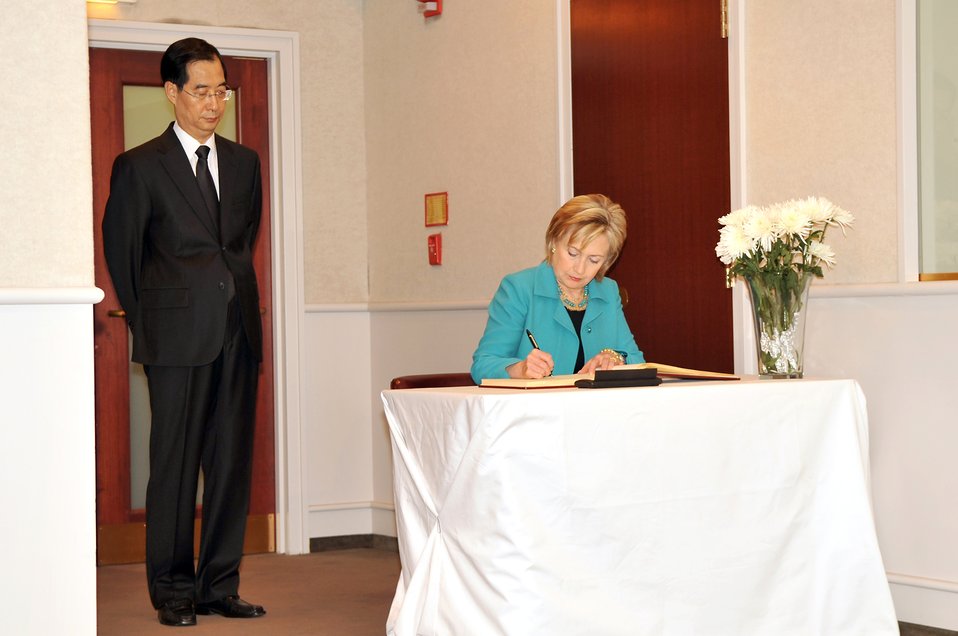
Secretary Clinton Signs Condolence Book for Former South Korean President Roh

U.S. Secretary of State HIllary Rodham Clinton signs the condolence book for former South Korean President Roh at the Republic of Korea Embassy in Washington, DC May 28, 2009.